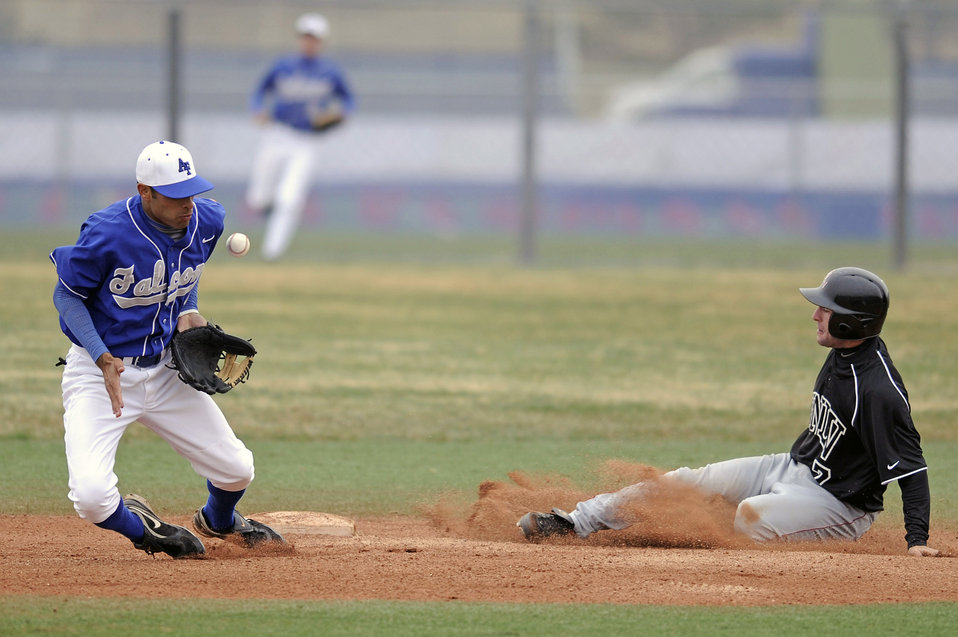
Baseball: Academy battles UNLV, falls 20-13

U.S. Air Force Academy junior shortstop K.J. Randhawa stops a badly thrown ball as UNLV steals 2nd base during the 20-13 loss to the University of Nevada, Las Vegas at Falcon Field April 25 at the Academy in Colorado Springs, Colo. The loss dropped Air Force to 14-25 overall, with a Mountain West Conference record of 3-8.